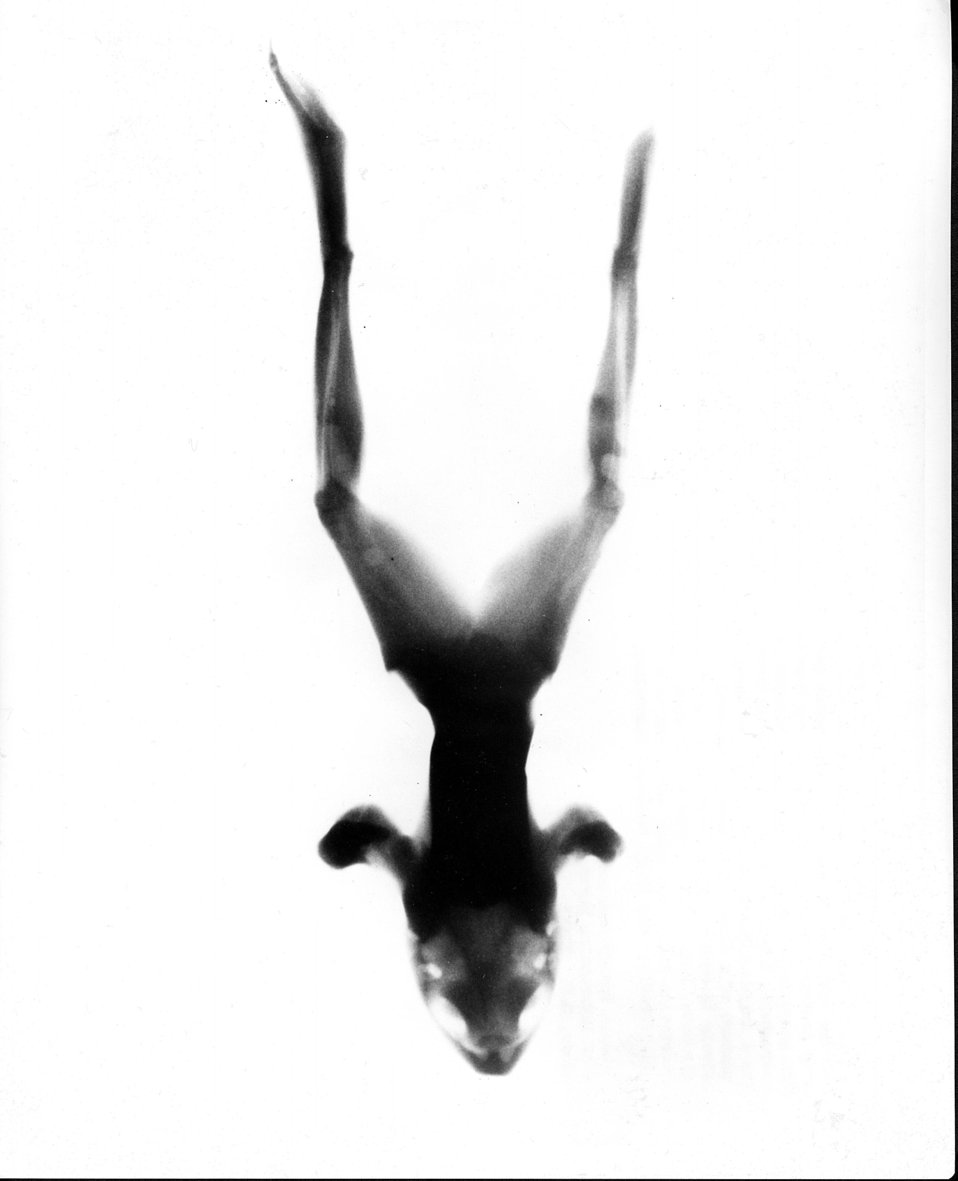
The Atomic Energy Commission's Oak Ridge National Laboratory (Tenn.) neutron radiography facility, making use of the neutron flux of the Oak Ridge Research Reactor, takes pictures by neutron transmission such as x-ray machines do with gamma rays. c. 1972